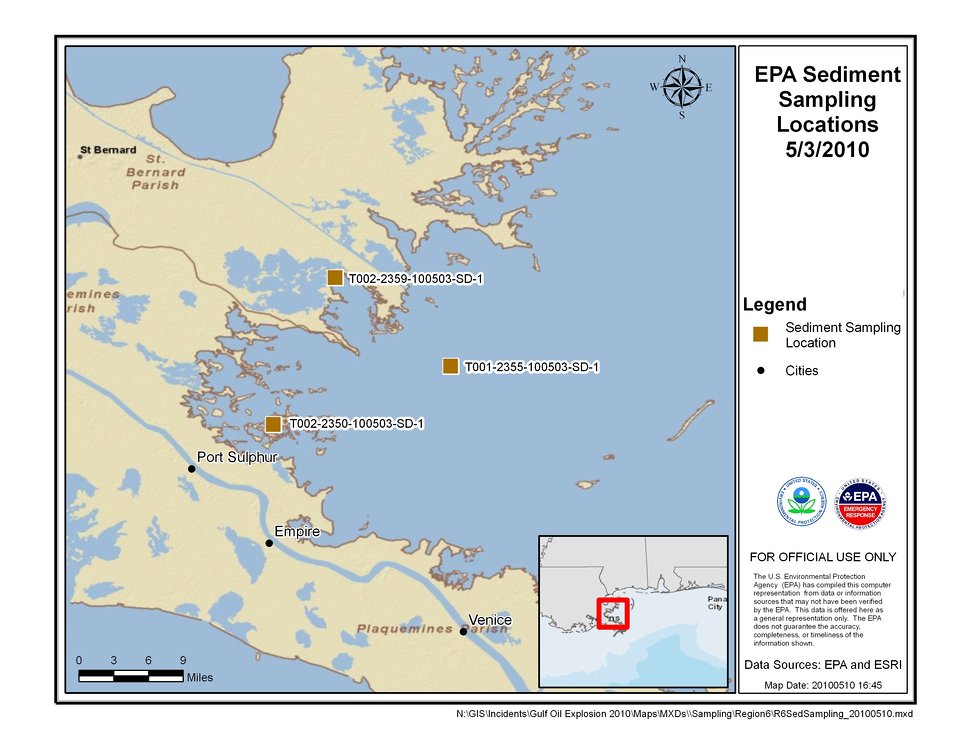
EPA Sediment Sampling Locations May 3, 2010